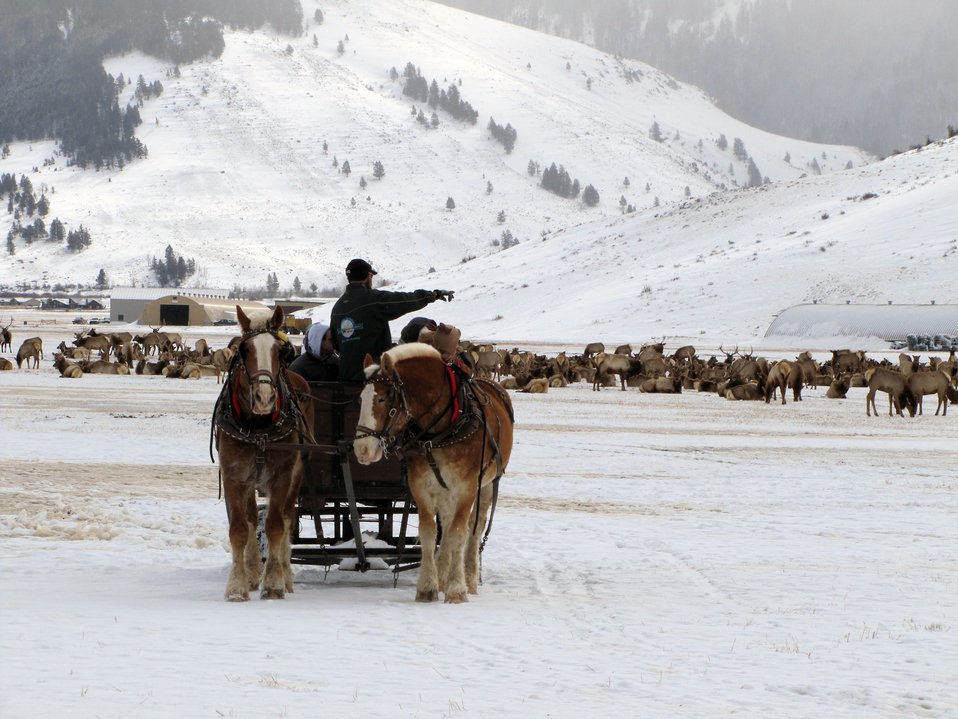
Educational Sleigh Ride

Sleigh drivers offer a quality educational program during the ride. The contractor's staff works closely with the National Elk Refuge's visitor services staff to stay current on refuge management topics.